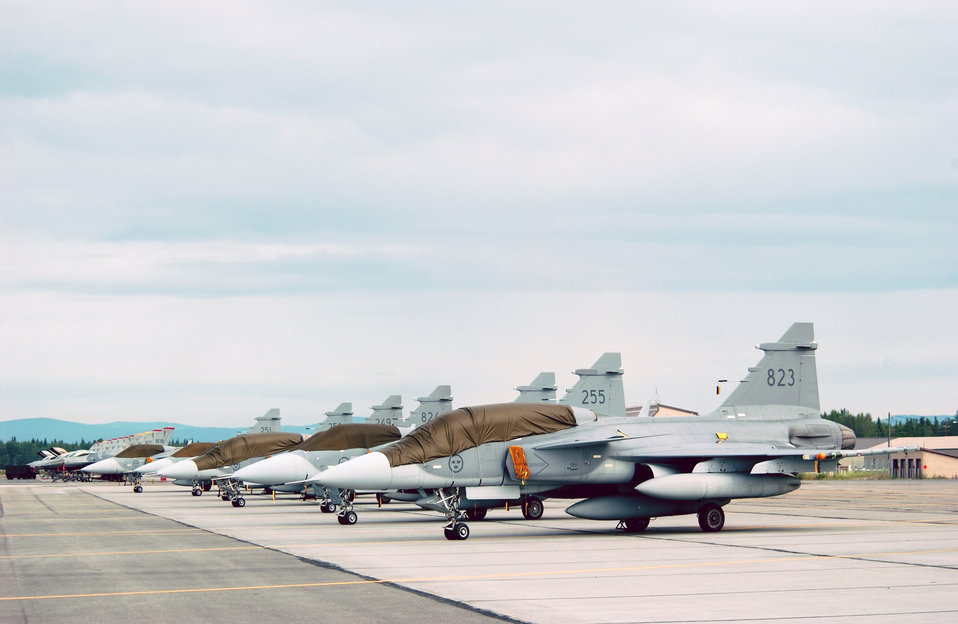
Cooperative Cope Thunder 2006

JAS 39 Gripen from the Swedish Air Force's Tango Red unit based at Malmen Air Base, Sweden, sit on the flightline at Eielson Air Force, Alaska, on July 18 in preparation for Cooperative Cope Thunder 2006. The combined joint air training exercise provides scenarios that are as realistic as combat within the constraints of the training environment.